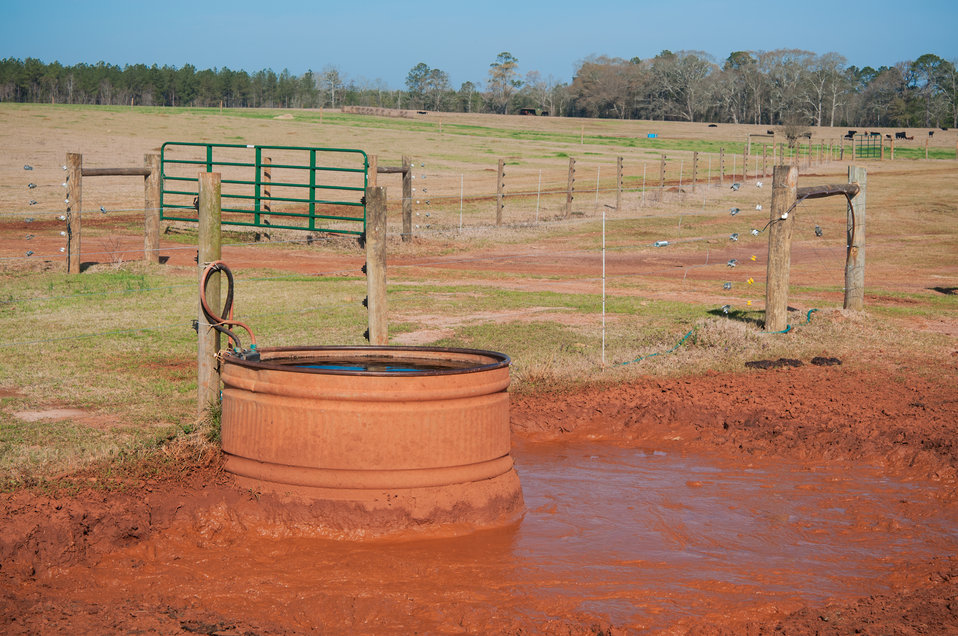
The livestock high traffic area around a watering trough reveals the problems of soil erosion on Banamacc Farms in Edison, Calhoun County, GA on Mar. 7, 2013. Banamacc Farms owner Raul Moreno has obtained a U.S. Department of Agriculture (USDA) National Resources Conservation Service (NRCS) Environmental Quality Incentive Program (EQIP) contract, which will enable him to construct a concrete pad around the trough to prevent soil erosion. The USDA Strike Force Initiative has designated Calhoun County, GA as a Strike Force county selected to receive assistance to relieve persistent poverty in historically high-poverty counties.